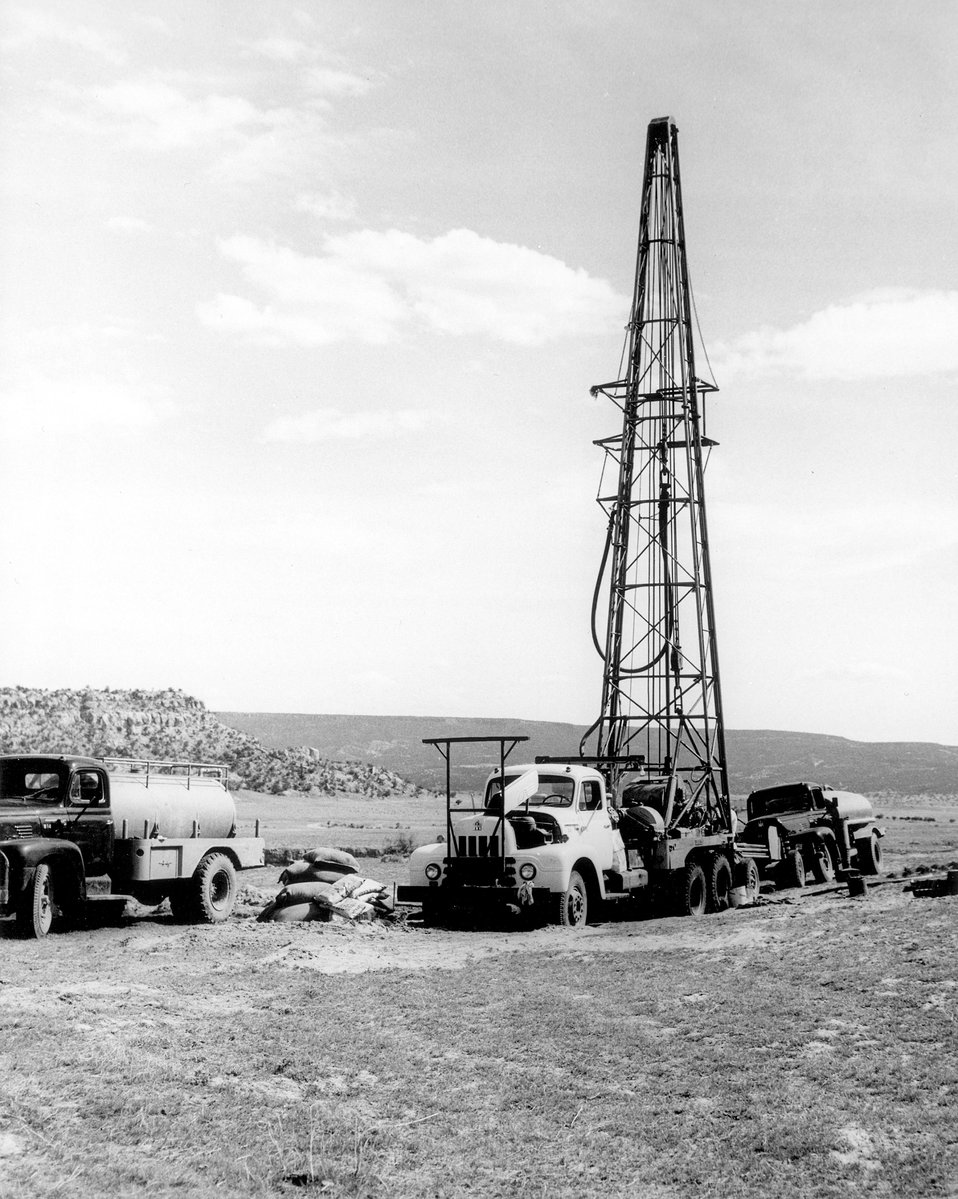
Drilling rig used in exploration for uranium. The machine drills 4' to 6' hole to depths exceeding 1,000 feet. c. 1968